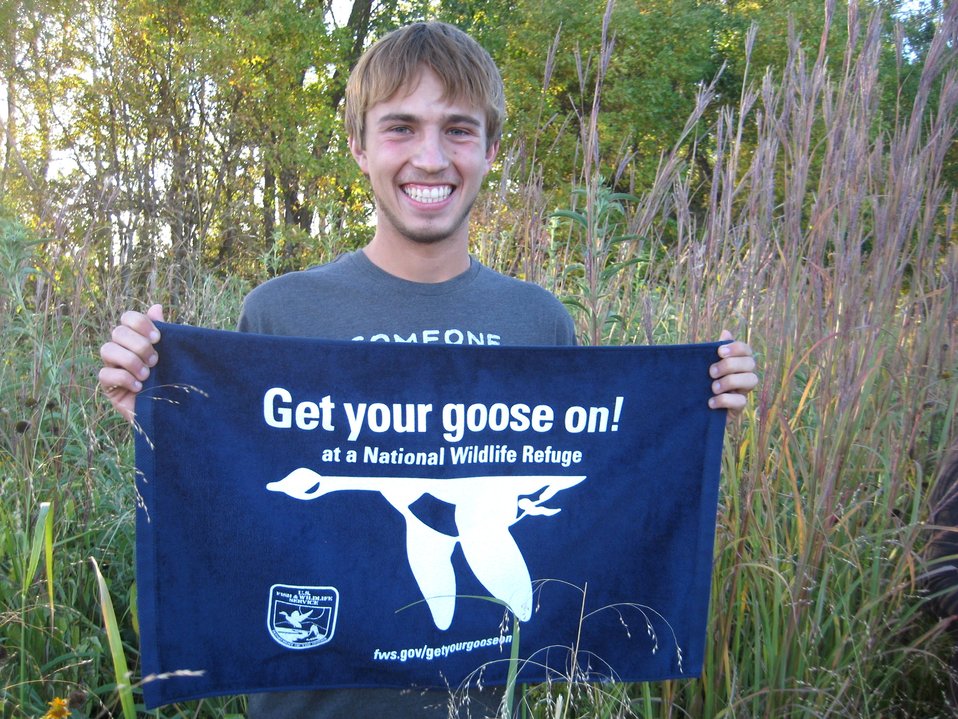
Get Your Goose On!

Taken at Tewaukon National Wildlife Refuge.